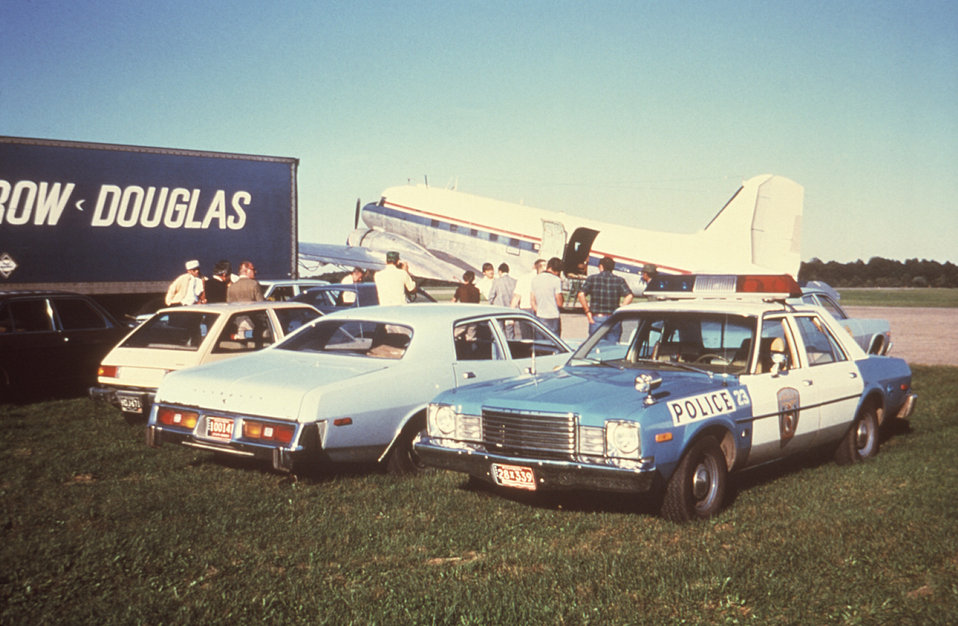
This 1980 photograph depicts a DC-3 aircraft used in the dispersal of ultra-low volume (ULV) insecticidal fog in order to control populations of potential insect disease vectors.